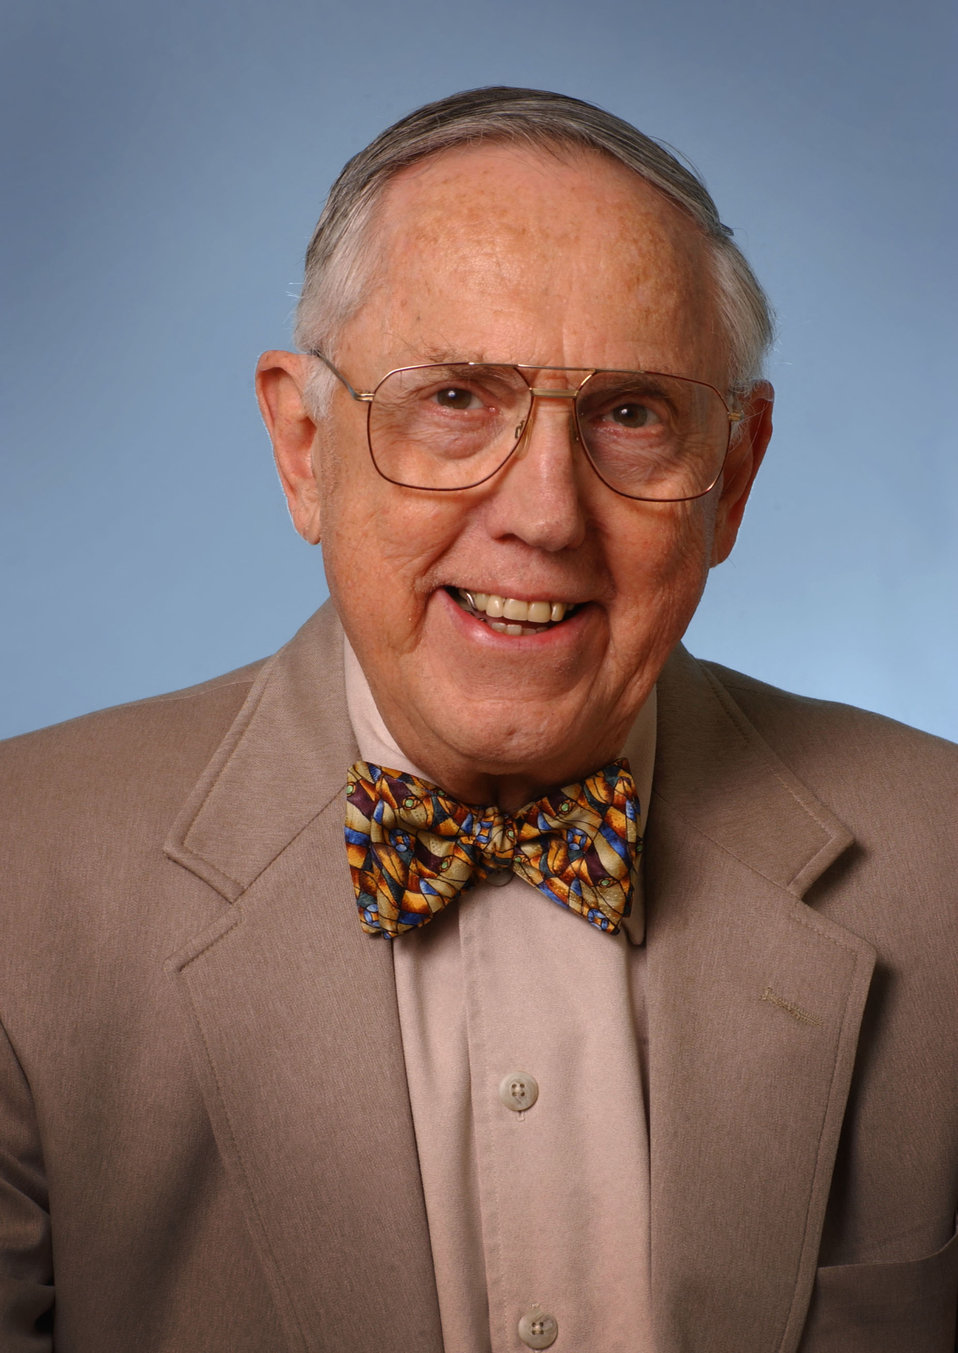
Bill Wilcox Oak Ridge 2003

03-094-6 DOE photo Lynn Freeny 5-10-2003 Oak Ridge Tennessee